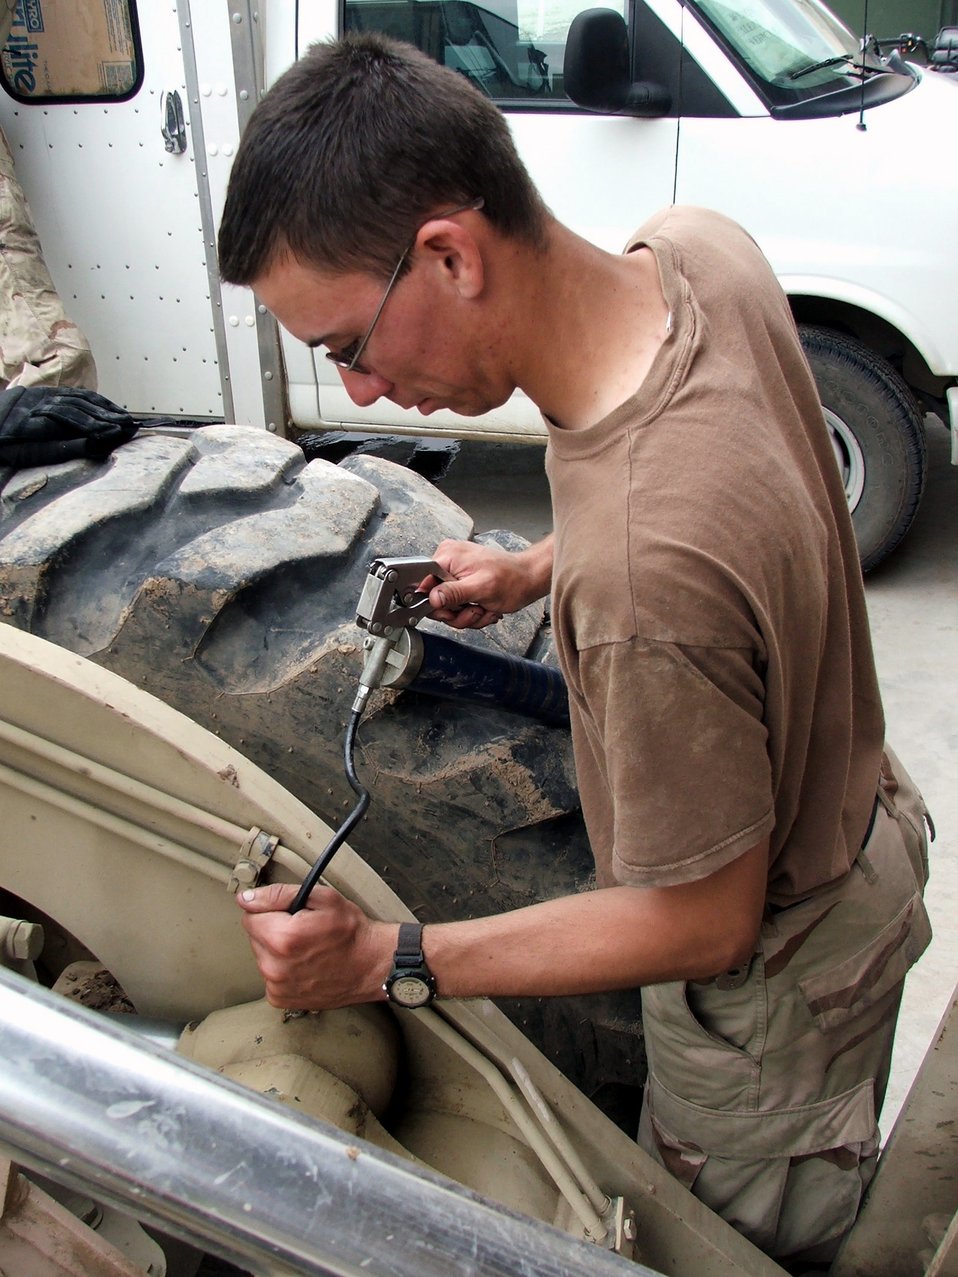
Deployed vehicle maintainers keep wheels turning

KARSHI-KHANABAD AIR BASE, Uzbekistan -- Airman 1st Class William Lawson uses a grease gun on a forklift in the vehicle maintenance shop here May 7. He is assigned to the 416th Expeditionary Mission Support Squadron's vehicle maintenance flight and is deployed from Grand Forks Air Force Base, N.D.